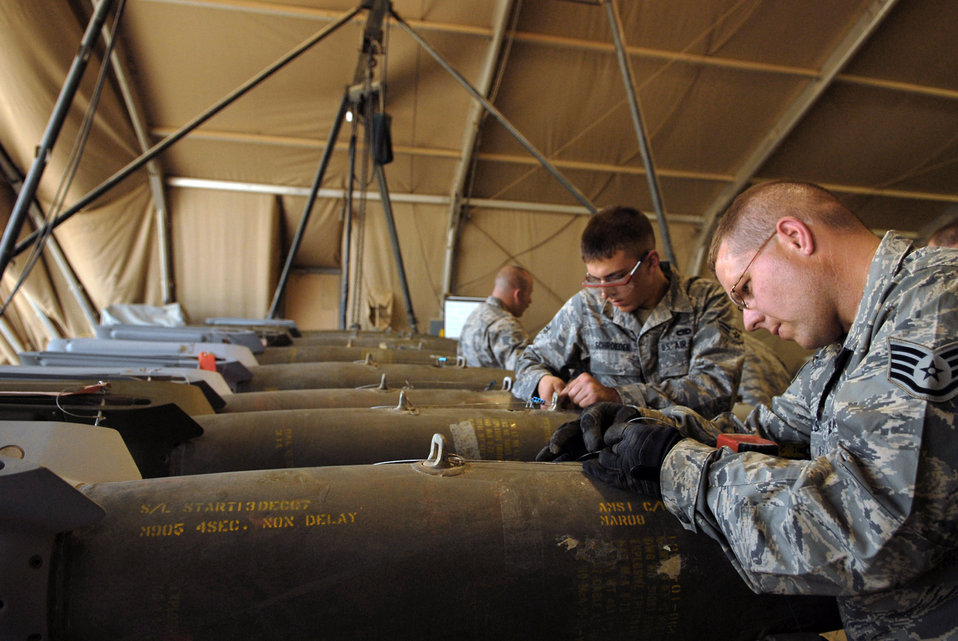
Easy does it

Airmen from the 332nd Expeditionary Maintenance Squadron connect arming lanyards for guided bomb units at Joint Base Balad, Iraq. The lanyard is connected directly to the aircraft, and will initiate internal components and detonation timing.